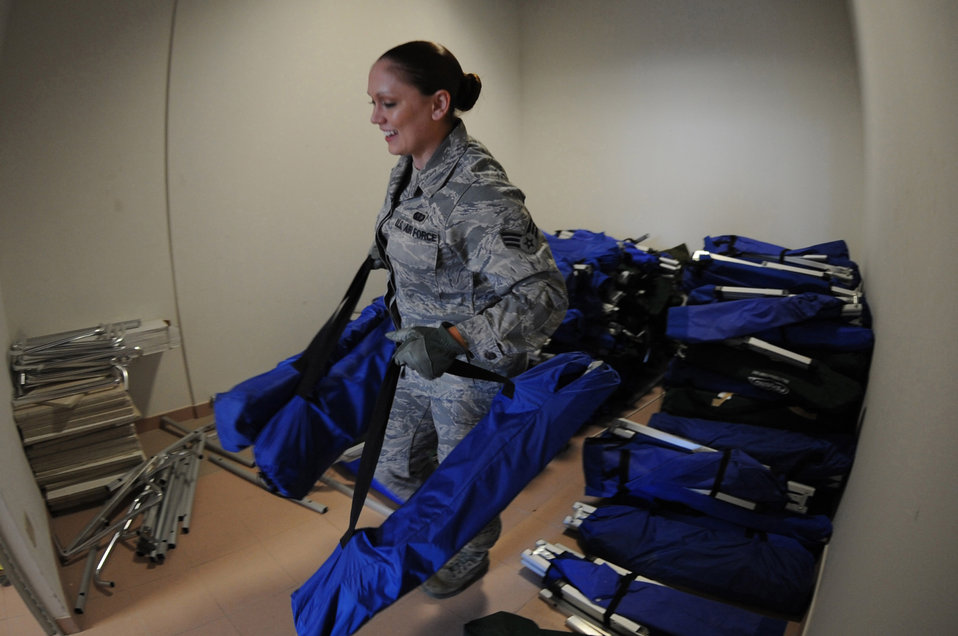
Odyessey Dawn

Senior Airmen Joy DiVelbiss, 31st Force Support Squadron command support section, moves cots out of a storage room for incoming personnel arriving at Aviano Air Base, Italy, in support of Operation Odyssey Dawn, March 20. Joint Task Force Odyssey Dawn is the U.S. Africa Command task force established to support the larger international response to the unrest in Libya. A broad coalition of nations are partnering to enforce U.N. Security Council Resolution (UNSCR) 1973, which authorizes all necessary means to protect civilians in Libya under threat of attack by Qadhafi regime forces. JTF Odyssey Dawn is commanded by Admiral Samuel J. Locklear, III.